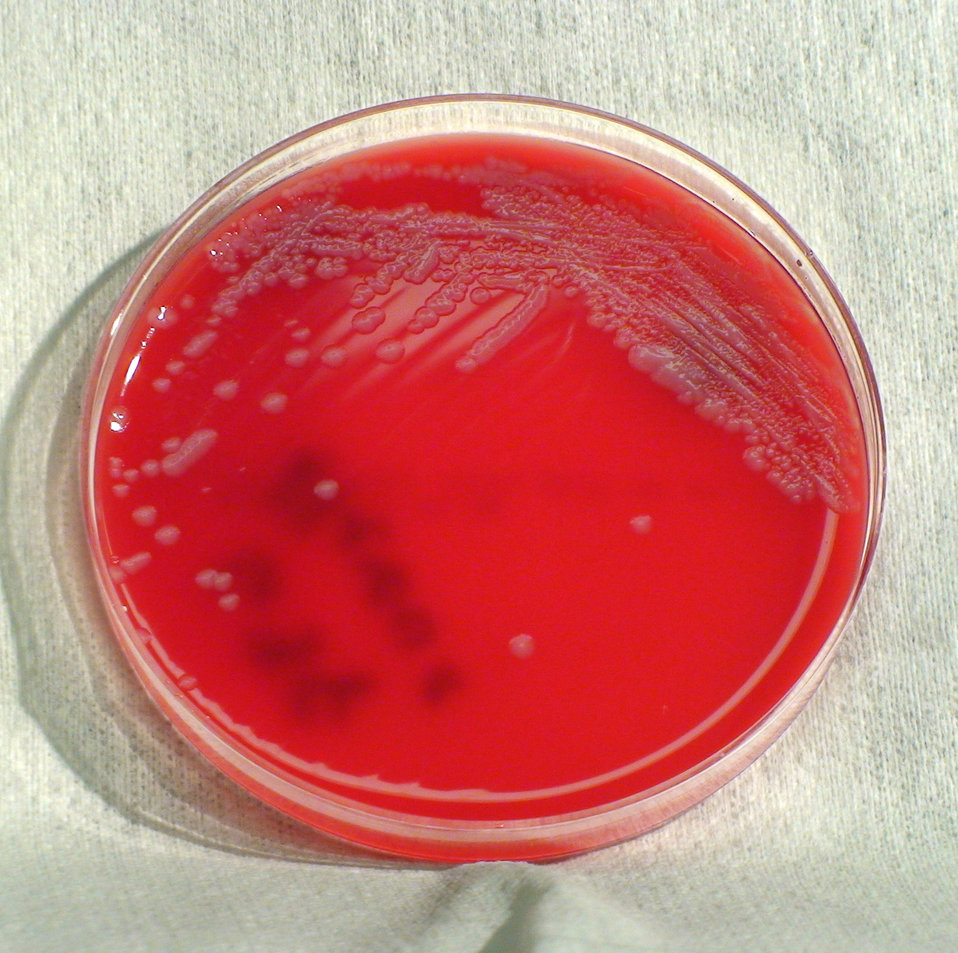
This photograph depicts the colonial morphology displayed by Gram-positive Bacillus flexus bacteria, which was grown on a medium of sheep's blood agar (SBA), for a 24 hour time period, at a temperature of 37�C. See PHIL 12380, for a closer view of these bacterial colonies.